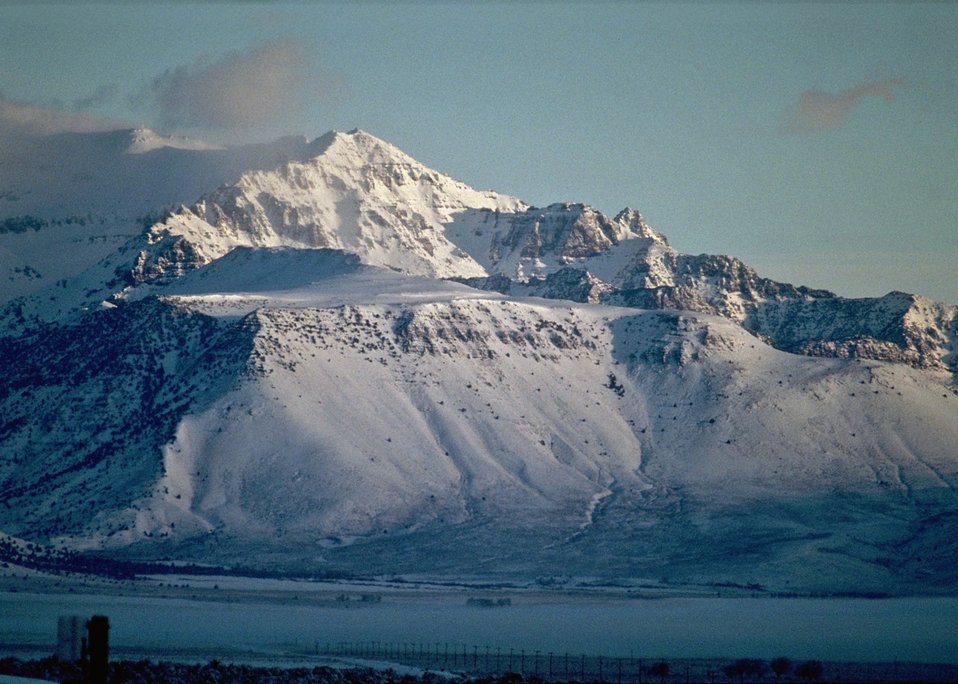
A winter scene of Steens Mountain from the Southeast near Andrews, Oregon.